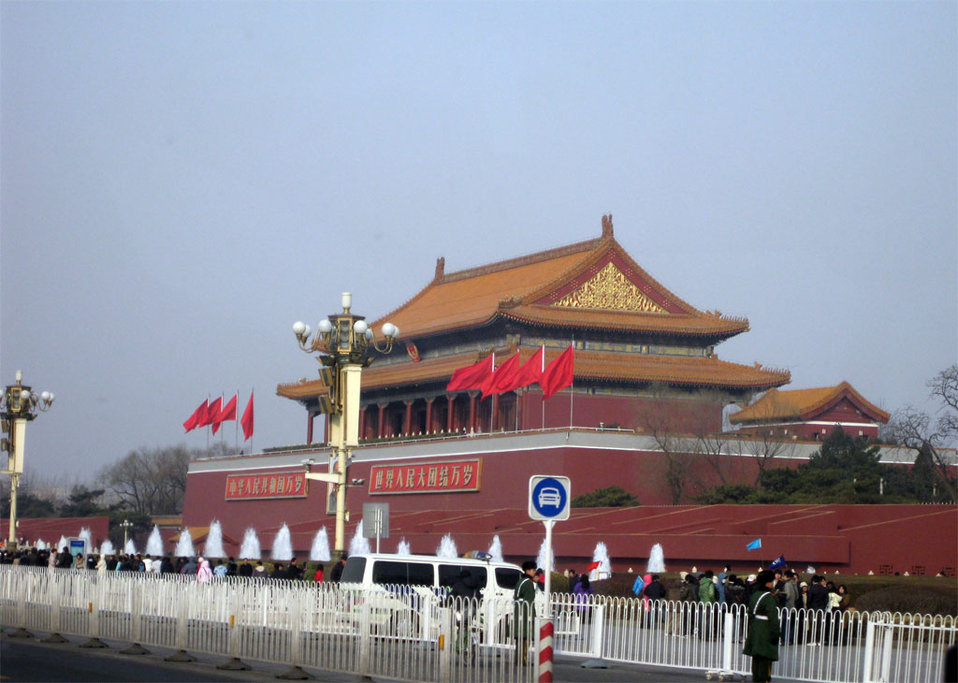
Forbidden City in Beijing

Behind the Scenes: The Forbidden City as seen along the route to the Diaoyutai State Guesthouse in Beijing, China February 20, 2009.